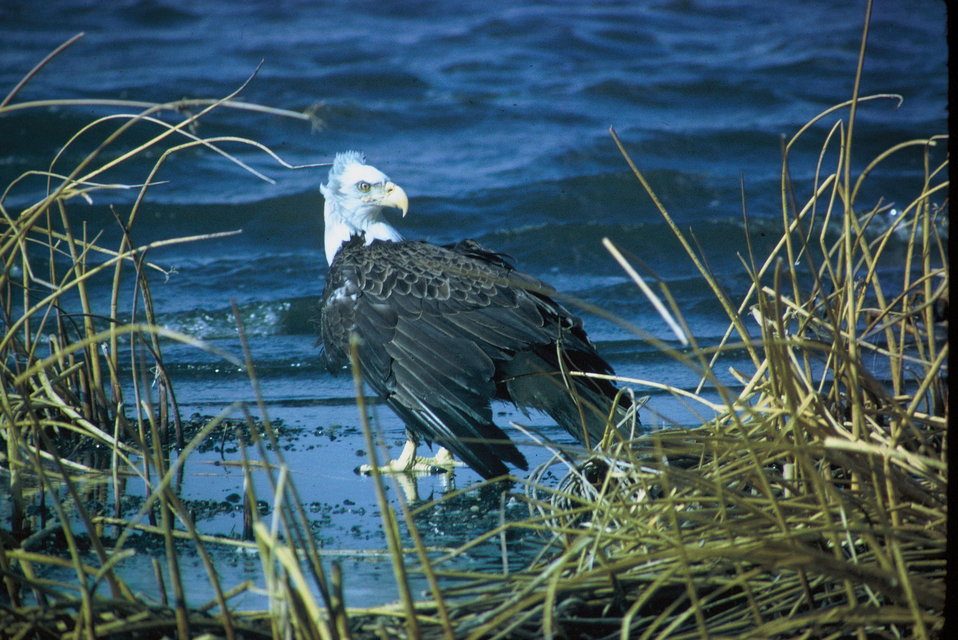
Bald Eagle.